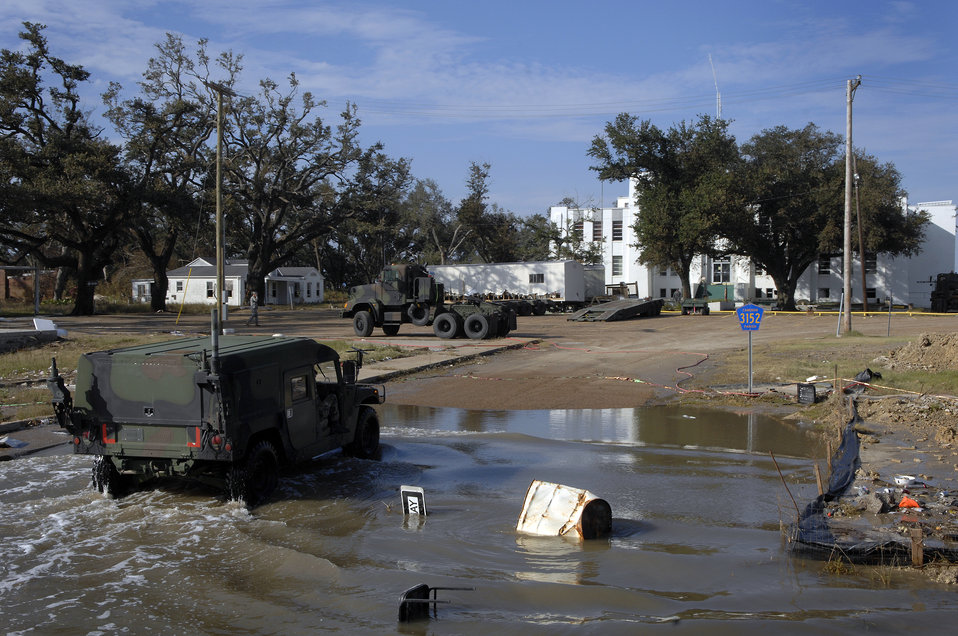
Louisiana Guard clears devastation from Cameron Parish

Engineers from the Louisiana Army National Guard's 528th Engineer Battalion pull up to the court house of Cameron, La., where they removed 14 feet of water from the building's basement that was caused by Hurricane Ike.